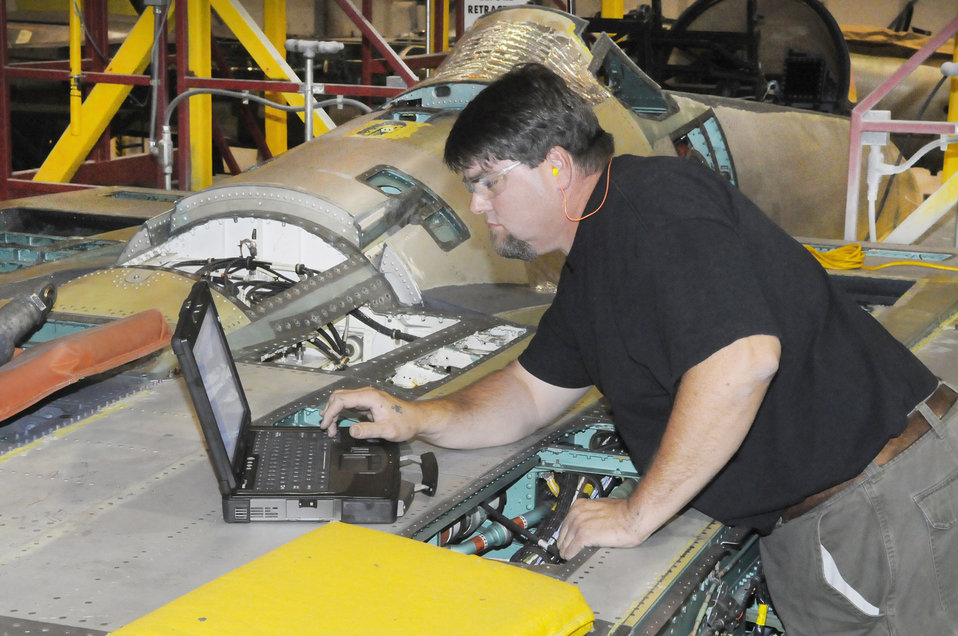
Computers to replace paper technical orders on Robins AFB flightline

Michael Osborne utilizes an e-tool to work on an F-15 longitudinal and lateral bell crank Nov. 18, 2010 at Robins Air Force Base, Ga. Mr. Osborne is an F-15 aircraft mechanic.